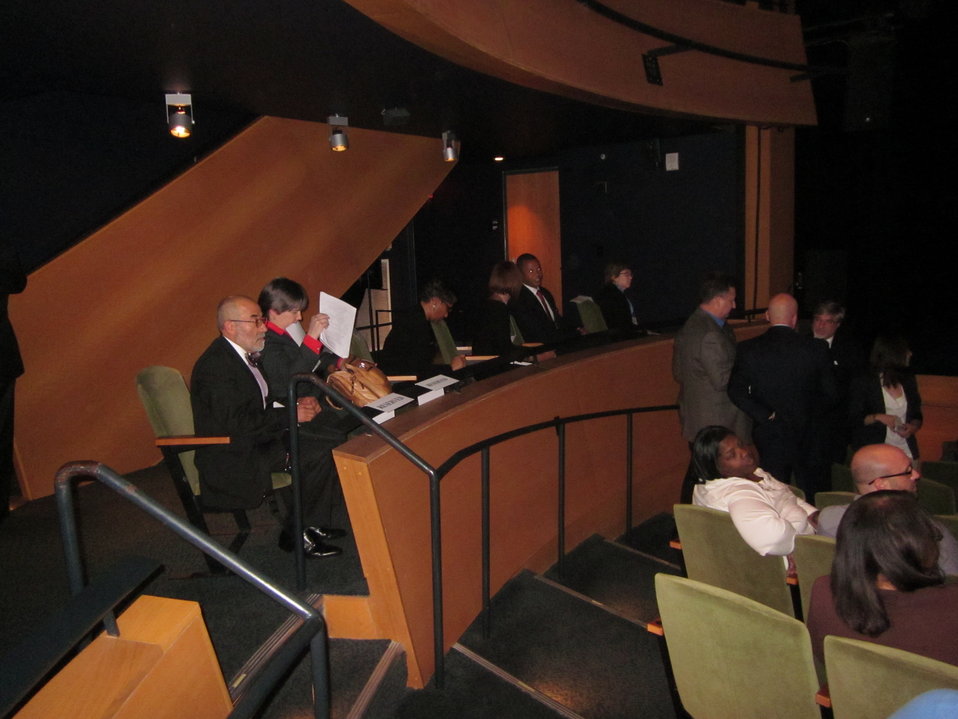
Baton Rouge Pics 015